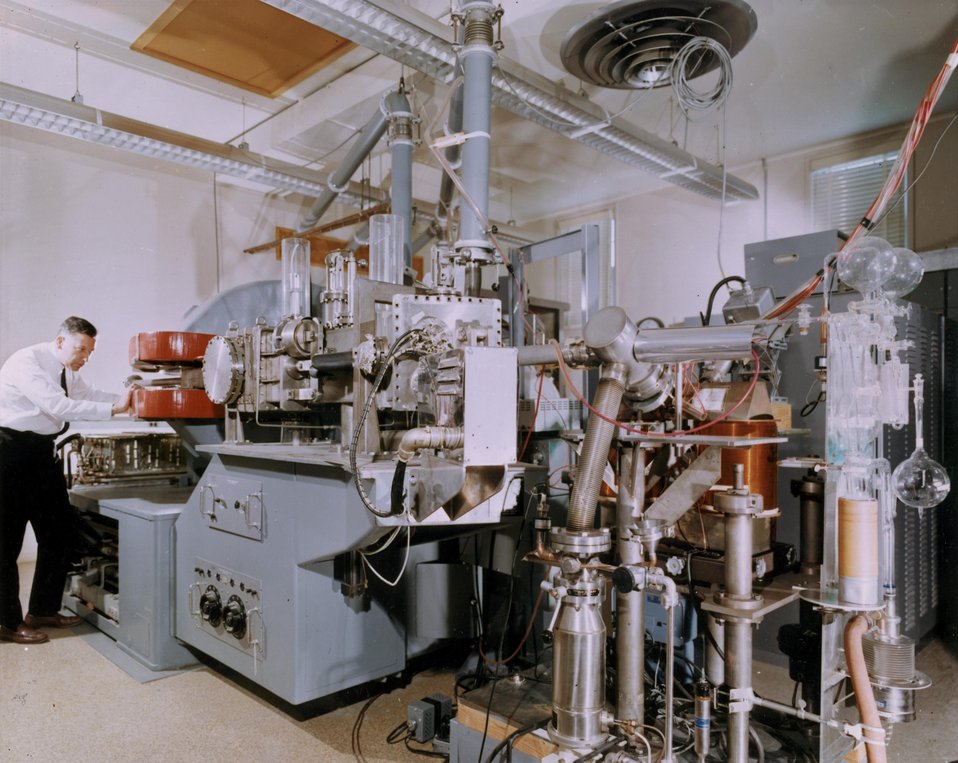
The Brookhaven Electromagnetic Isotope Separator is being used by Dr. Lewis Friedman of the Chemistry Department to generate intense, low energy, mass analyzed beams of ions for research on ion-molecule collision processes. c. 1966